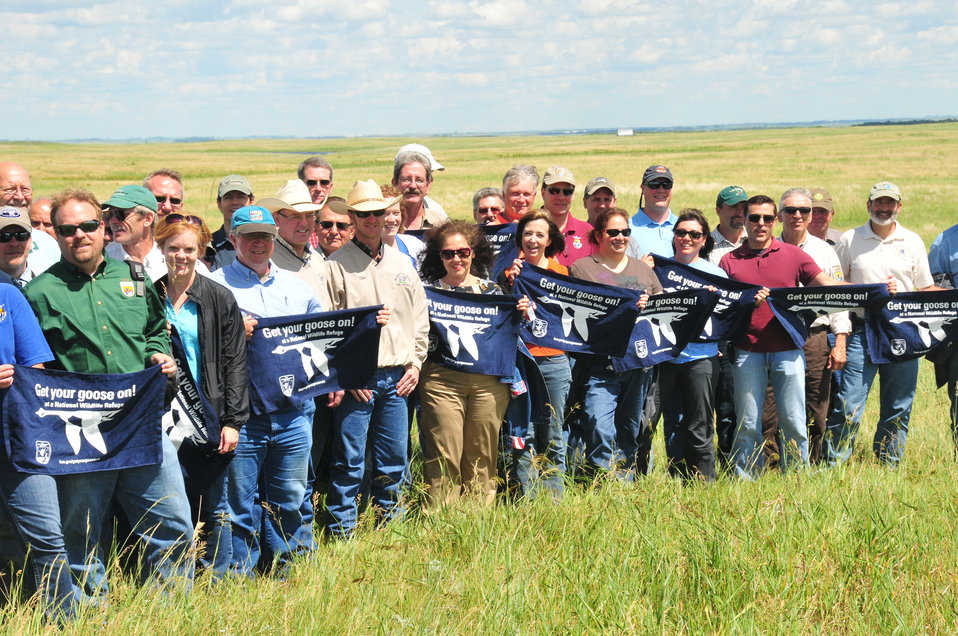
Get Your Goose On!

The national meeting for regional chiefs of the National Wildlife Refuge System is held three times a year in different locations around the country. This 2012 meeting took place in McPherson County, South Dakota, and focused on the Dakota Grassland Conservation Area.

This photo was taken on the Wade Weiszharr and Family Ranch, which contains perpetual U.S. Fish and Widlife grassland and wetland easements. This site is also located in the heart of Prairie Pothole Region, making it extremely productive migratory bird habitat and a great place to “Get your goose on!”

Here is a group shot taken on the Wade Weisszhauer Ranch!